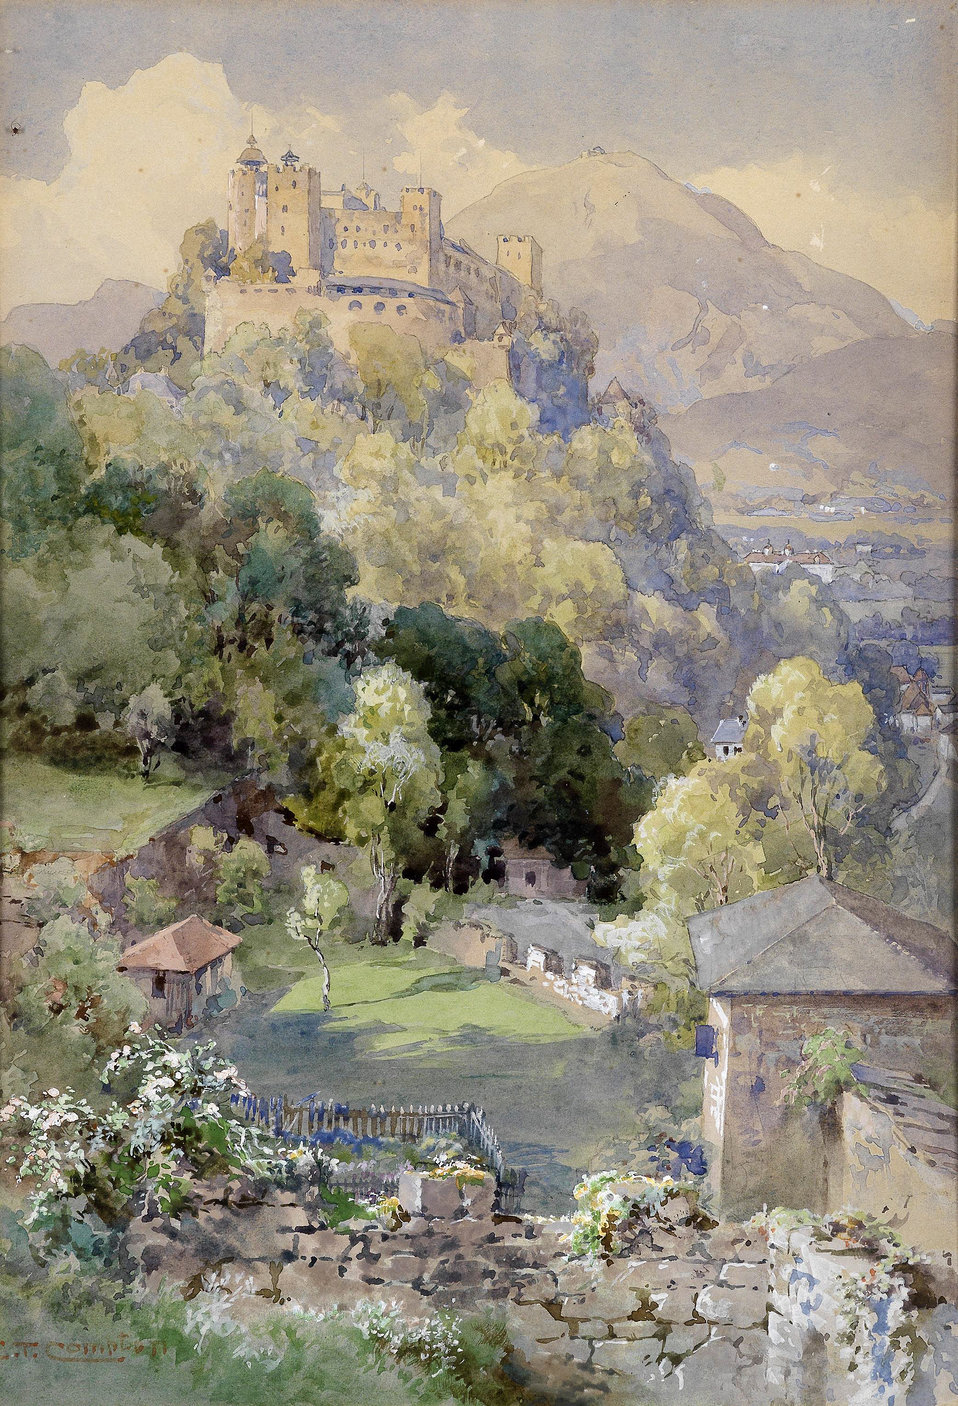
Blick auf die Festung Hohenwerfen in Salzburg, signiert E. T. Compton, Aquarell und Deckweiß auf Papier, 34,5 x 24 cm